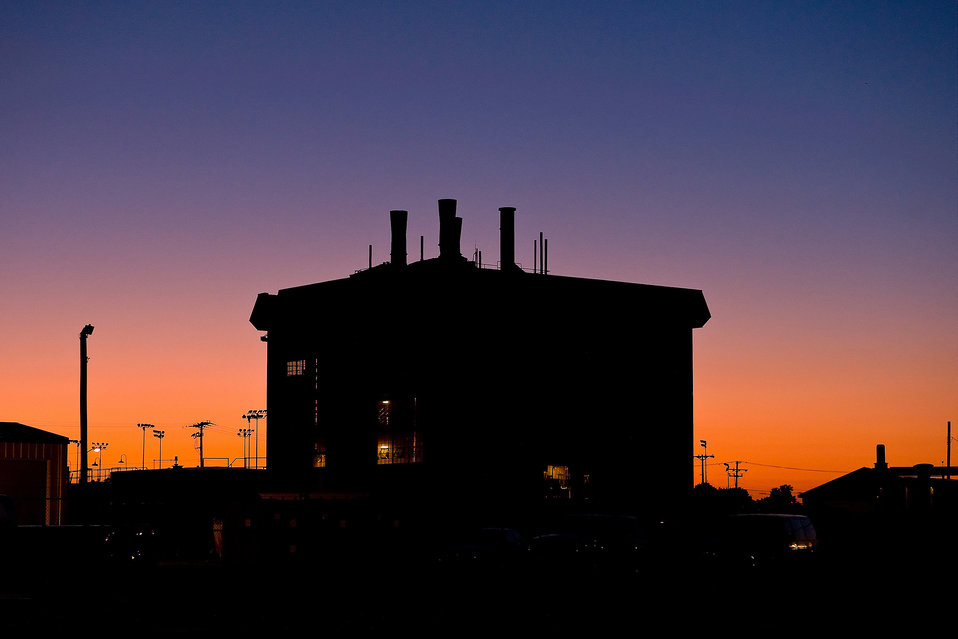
Heat plant decentralization

Engineers at Dover Air Force Base, Del., will soon begin construction to decentralize heating throughout the base which is expected to save the base about $1.9 million a year and reduce energy consumption by 15 percent. This project is estimated to cost just under $25 million and is funded by the American Recovery and Reinvestment Act of 2009.